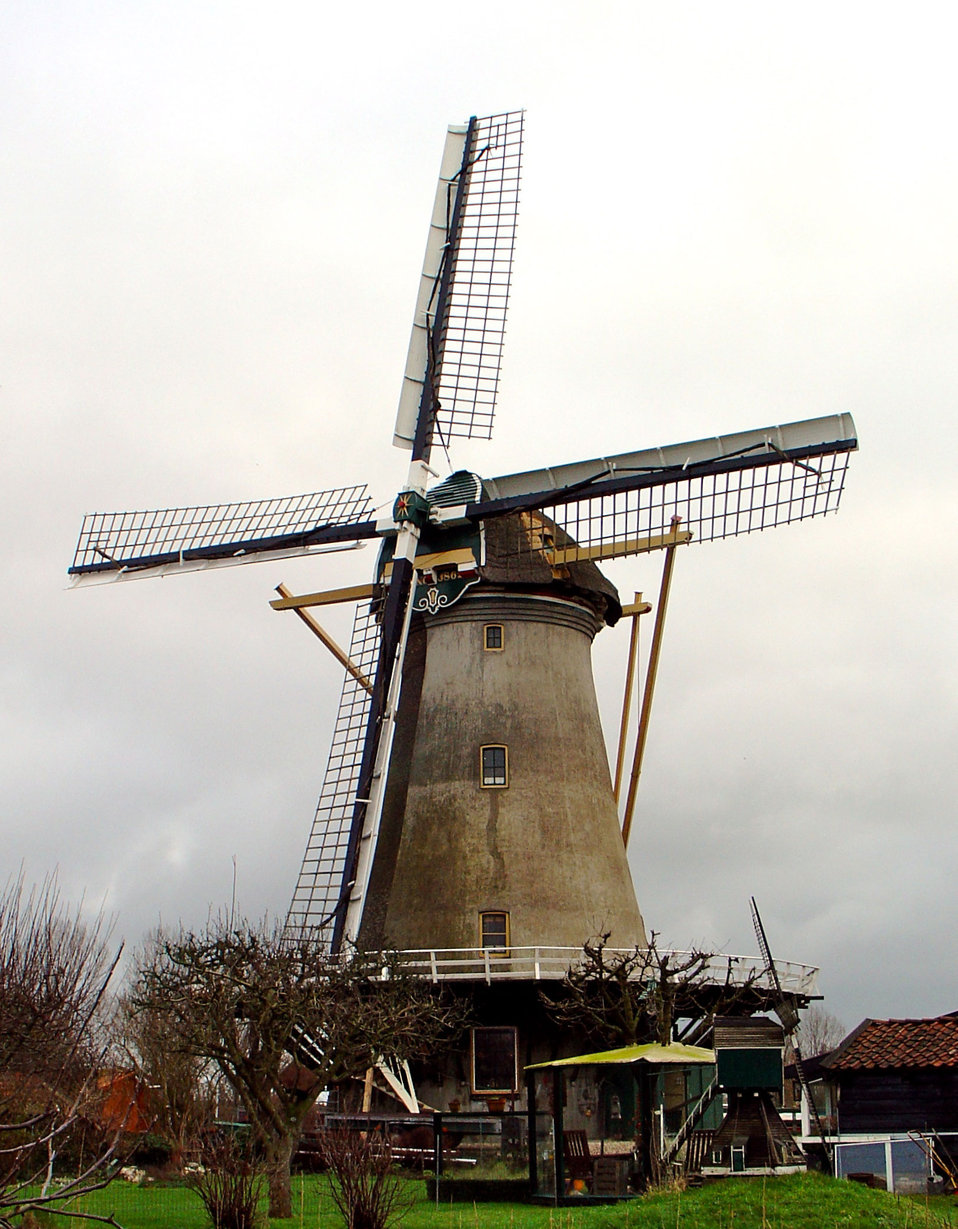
Foto van de Haastrechtse molen aan de Provinciale Weg West te Gouda (foto d.d. 29 januari 2007). nl:Categorie:Afbeelding Gouda nl:Categorie:Afbeelding molen